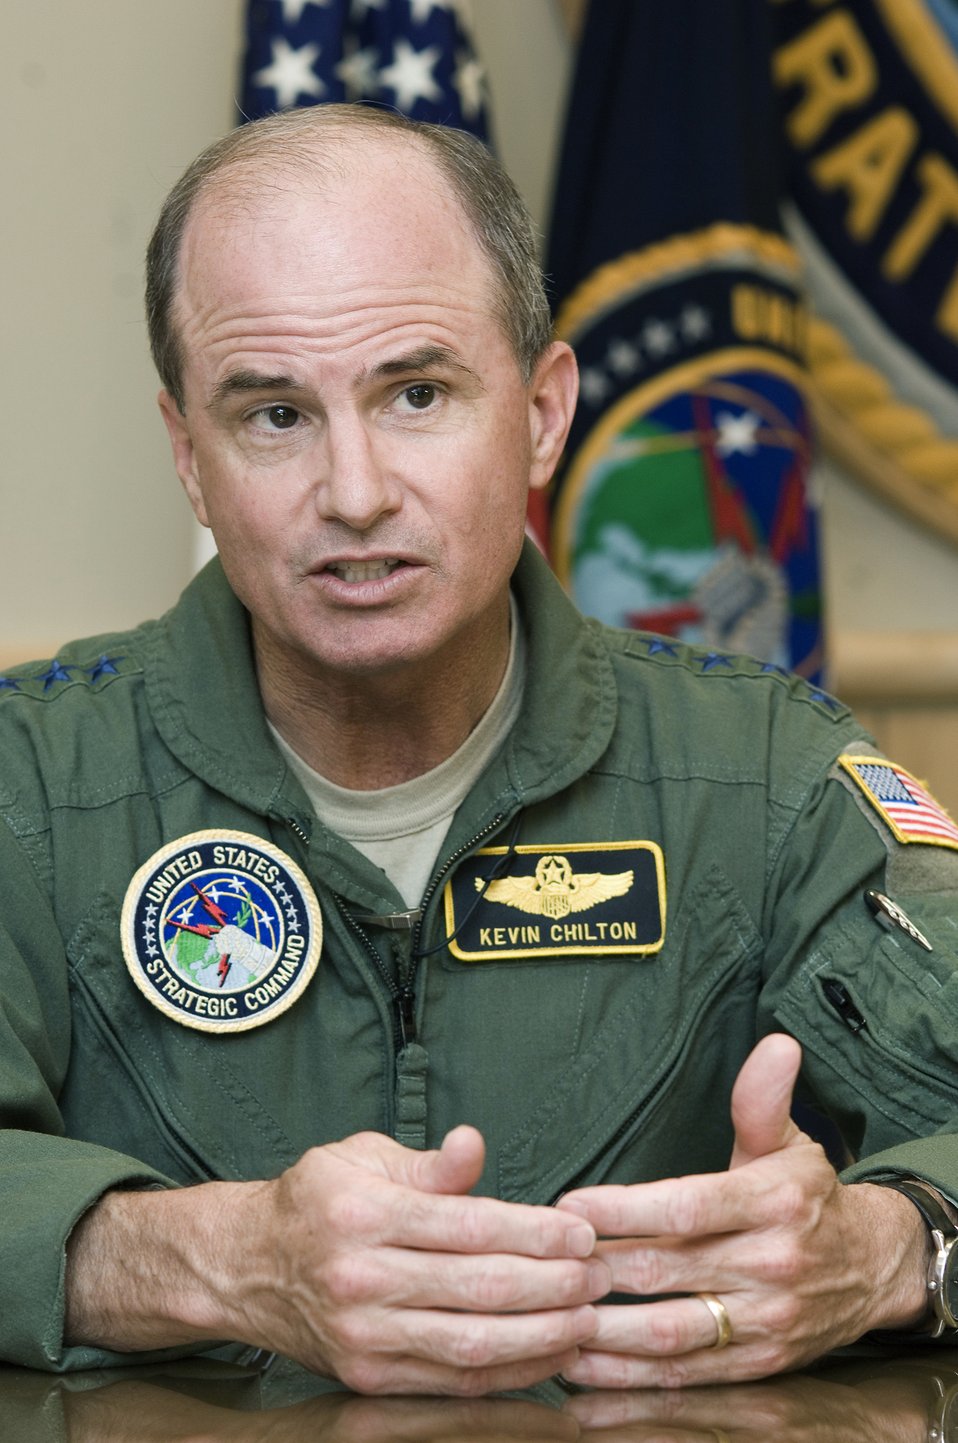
U.S. Strategic Command leader charts nuclear path for American military

Gen. Kevin P. Chilton speaks on the mission and capabilities of the U.S. Strategic Command Aug. 15 at Offutt Air Force Base, Neb. General Chilton is the STRATCOM commander.